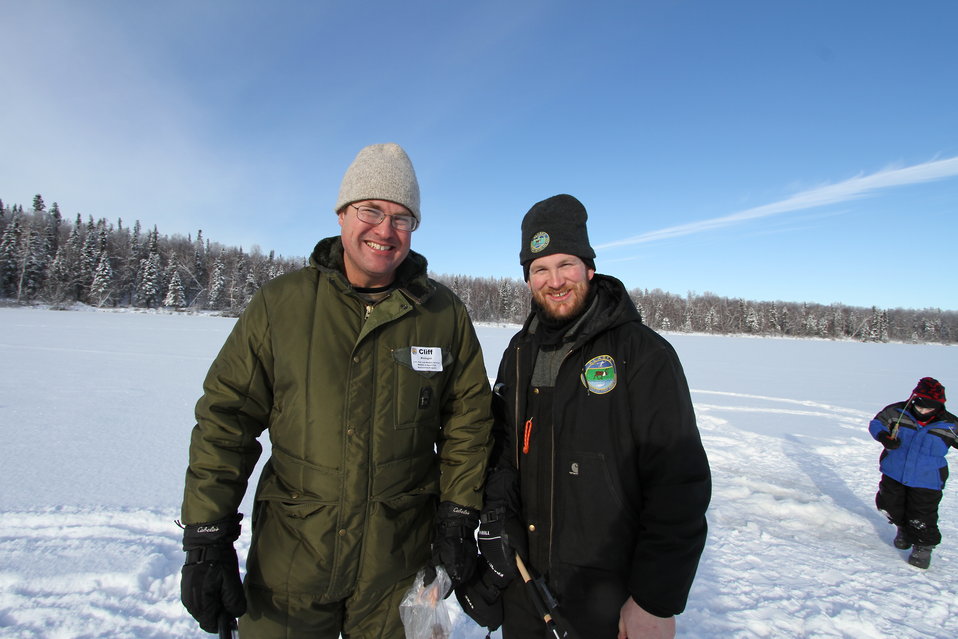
Connecting kids to fish via ice fishing!

the USFWS partnered with Alaska Department and Game in February 2014 to introduce 350 kids to ice fishing. USFWS/Katrina Mueller